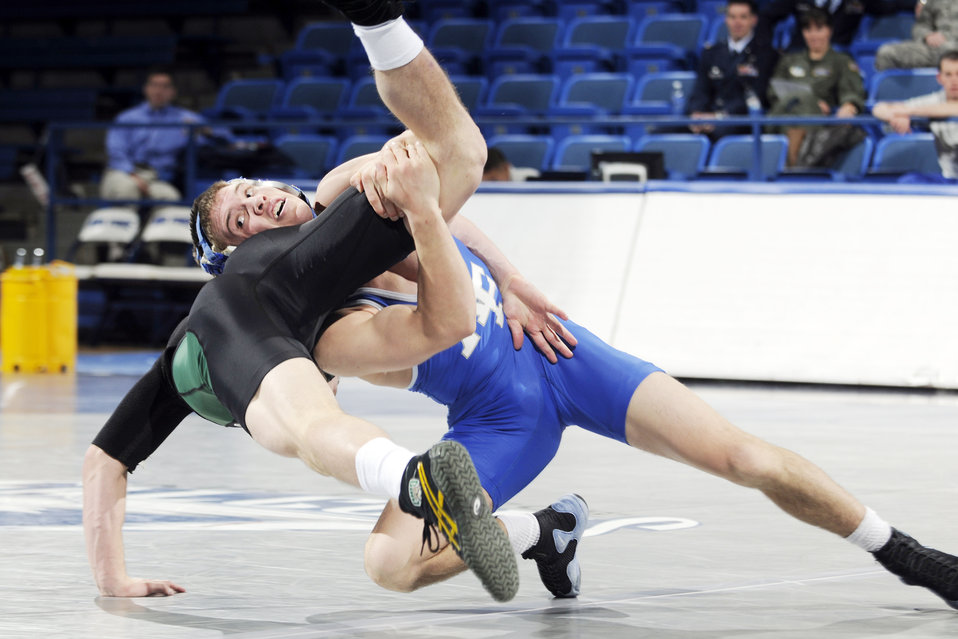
Falcons lose in first home contest

In the 125-lb. weight class, Air Force junior Andrew Zwirlein flips Ohio University's Kyle Ciccarello during the Falcons' first home contest of the season at the U.S. Air Force Academy's Clune Arena Dec. 11, 2009. Zwirlein won the match 10-5, but Air Force lost the contest against Ohio, 35-3.